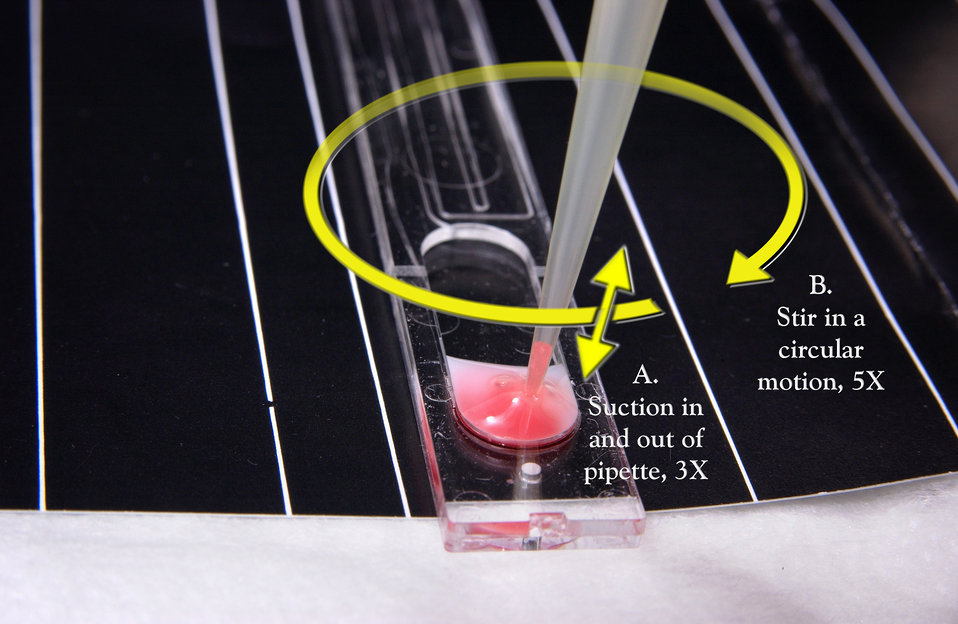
Mix together the CAPILLUS� HIV-1/HIV-2 Rapid Test latex reagent and specimen using a specific technique. (Step 9 of 12)